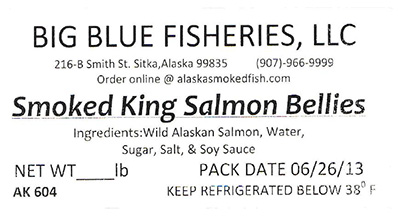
RECALLED – Salmon, Cod

September 30, 2013 – Product Recall – Big Blue Fisheries, Llc Recalls All Smoked Products From All Lots, Various Sizes, in Vacuum Packaging Because of Possible Health Risk.